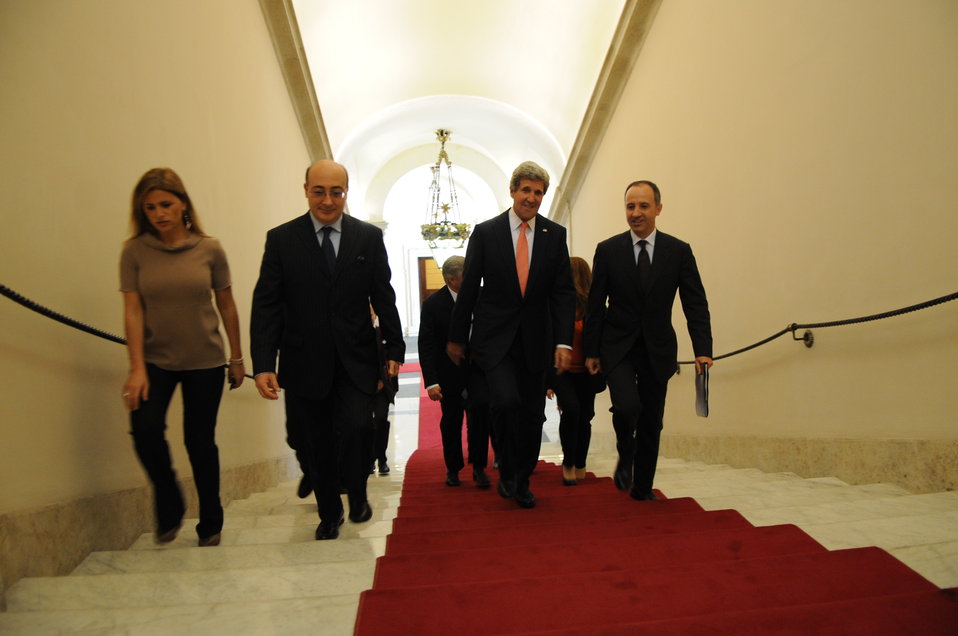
Secretary Kerry Walks to Meet Italian Prime Minster Letta

U.S. Secretary of State John Kerry climbs the stairs in Palazzo Chigi before meeting with Italian Prime Minister Enrico Letta in Rome, Italy, on May 9, 2013.